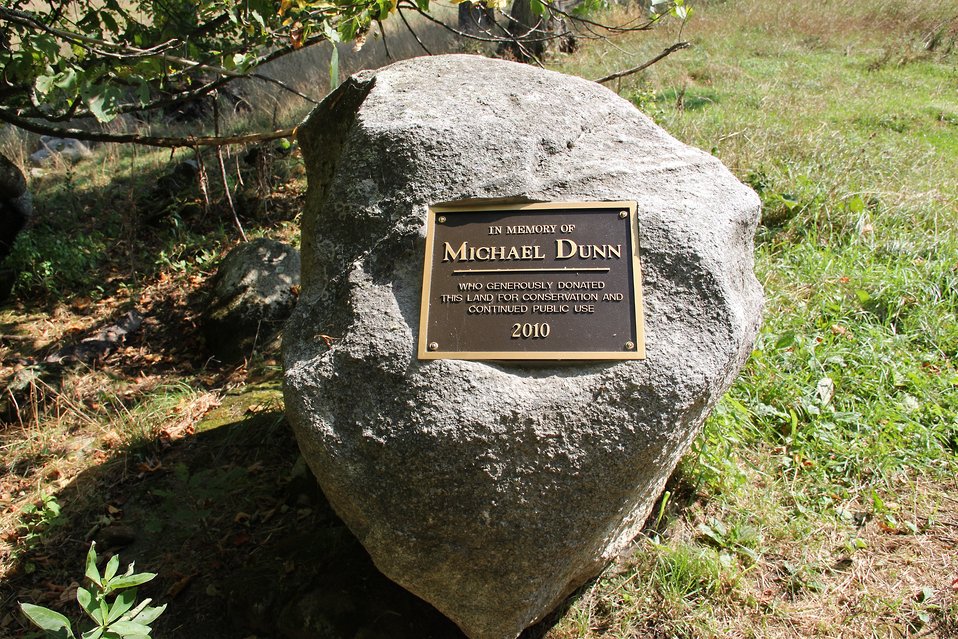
Dunn Plaque-Eagle Point Unit of Missisquoi National Wildlife Refuge

Plaque dedicating land to donor Michael Dunn at Eagle Point Unit of MNWR